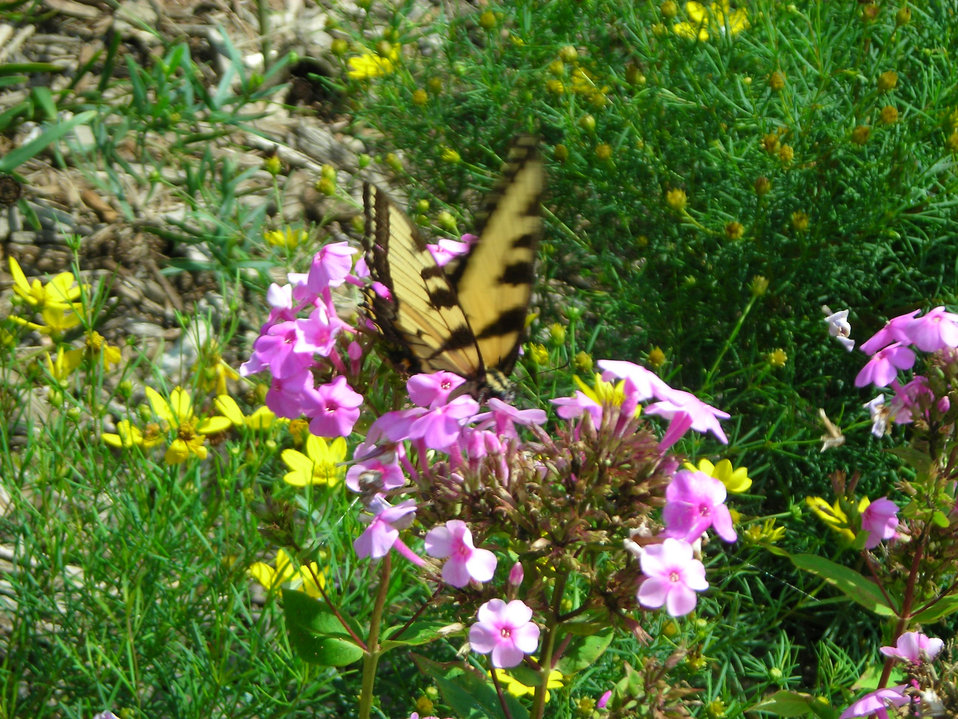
Pollinator 2

Tiger swallowtail butterfly feeds pollen in the phlox flower on Jan. 25, 2013. The Wayne National Forest, OH, Peoples Garden includes a native prairie, shade and several pollinator gardens.